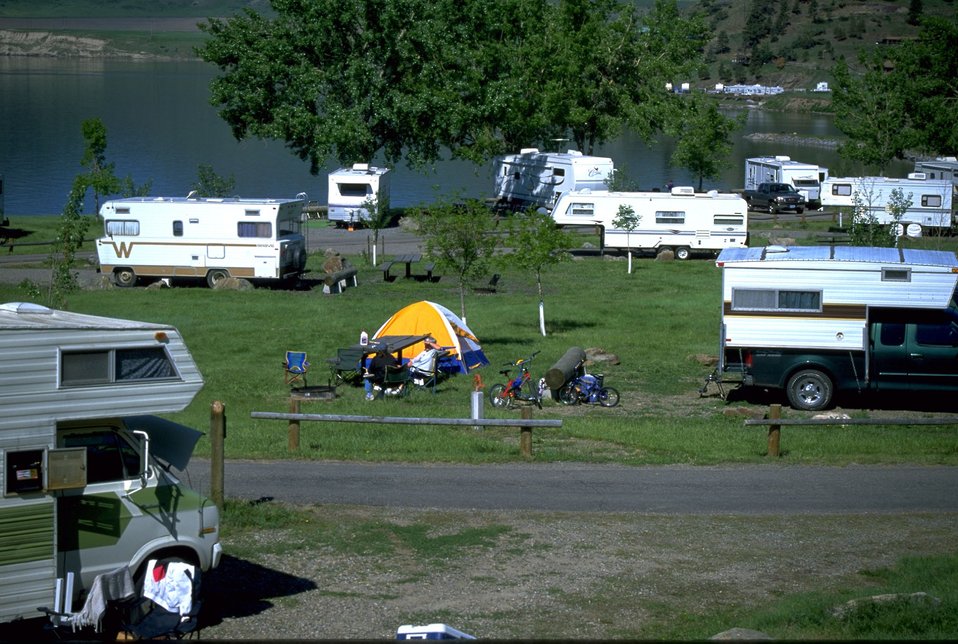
Campers at the Holter Lake Campground